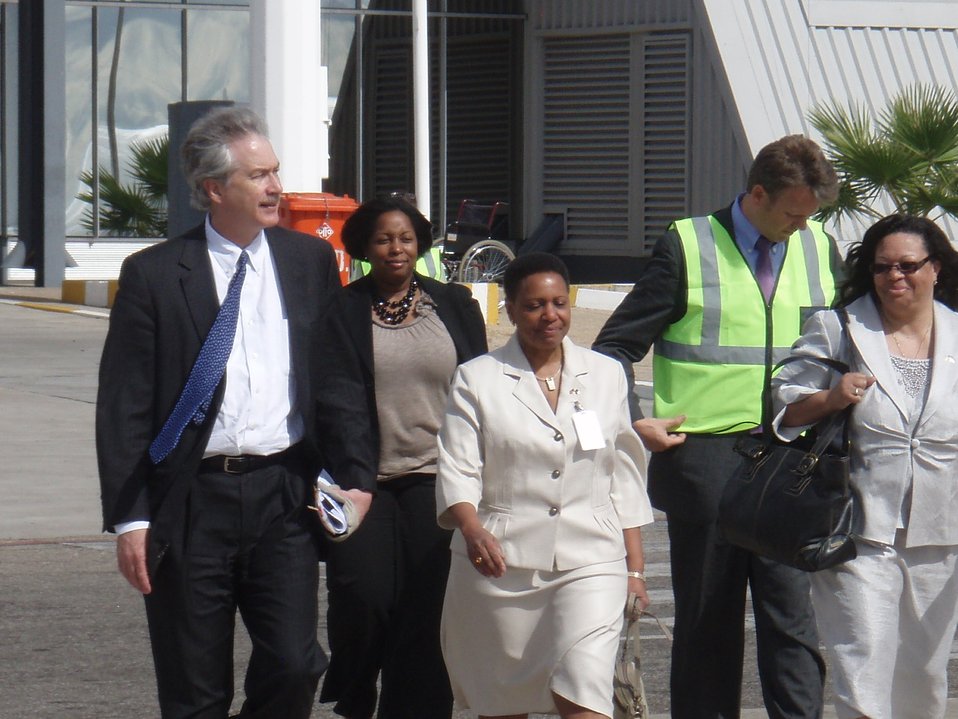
Under Secretary Burns With Special Assistant Littlejohn, Ambassador Mathieu, DeParis, and Deputy Assistant Secretary Susan Page

From left to right, Under Secretary for Political Affairs William J. Burns, Special Assistant J.R. Littlejohn, U.S. Ambassador to Namibia Dennise Mathieu, Frank DeParis, and Deputy Assistant Secretary Susan Page at the Hosea Kutako International Airport, Windhoek, Namibia, April 24, 2010.